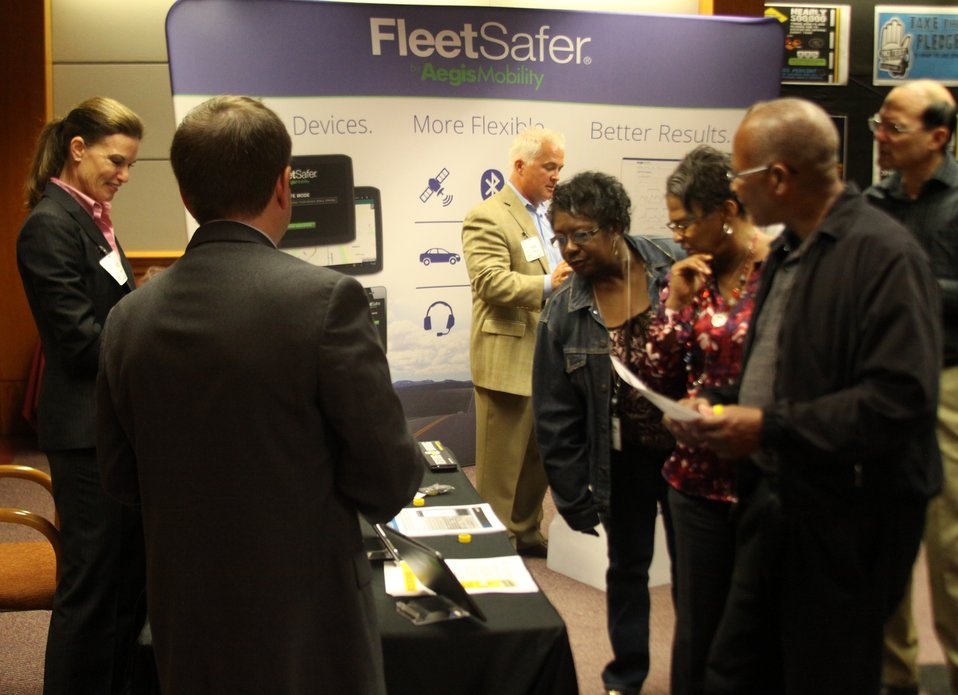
Distracted Driving Technology Showcase April 19, 2013